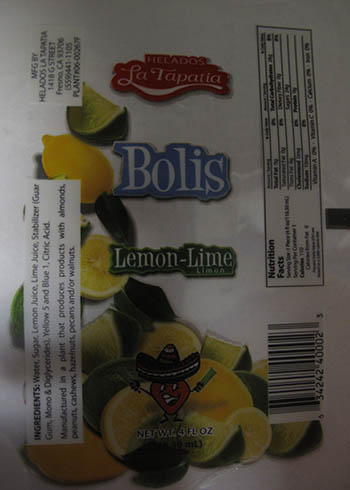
RECALLED – Ice cream products

March 19, 2014 – Product Recall – Helados La Tapatia, Inc. Recalls Products Because of Possible Health Risk.